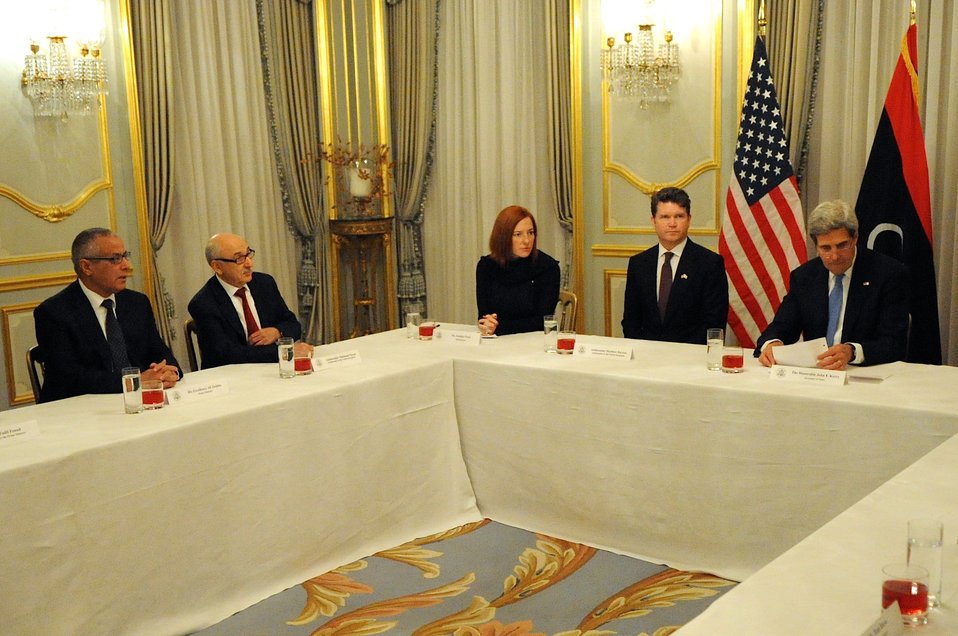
Secretary Kerry, UK Foreign Secretary Hague Meet With Libyan Prime Minister Ziedan

U.S. Secretary of State John Kerry and Libyan Prime Minister Ali Zeidan prepare for a trilateral meeting with British Foreign Secretary William Hague in London, United Kingdom, on November 24, 2013.